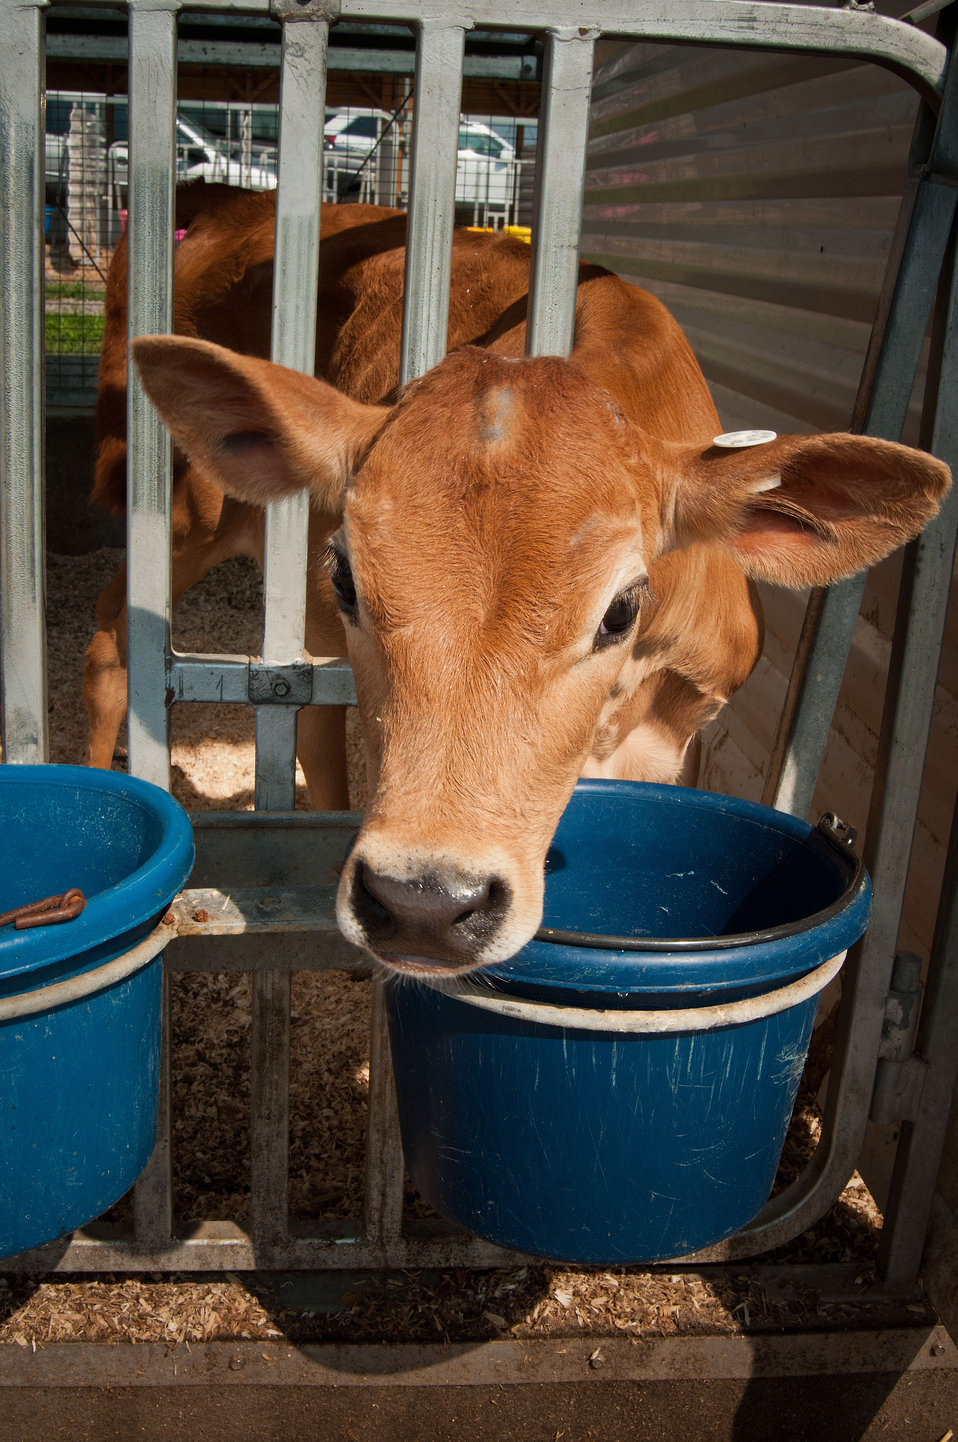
A future milk and energy producer at Pennwood Dairy Farms owned and operated by the Stoltzfus family in Berlin, PA. Agriculture Secretary Tom Vilsack toured the farm on Tuesday, July 17, 2012. During his visit Secretary Vilsack highlighted the U.S. Department of Agriculture’s (USDA) energy efficiency programs and announced a new effort to help rural consumers make affordable, energy-efficient improvements to their homes and businesses. Pennwood Dairy Farms uses an anaerobic digester to produce energy for the dairy. An anaerobic digester is a component of a waste management system that captures biogas for energy production. The digester is also part of a planned conservation management system that manages manure as a comprehensive nutrient management system.